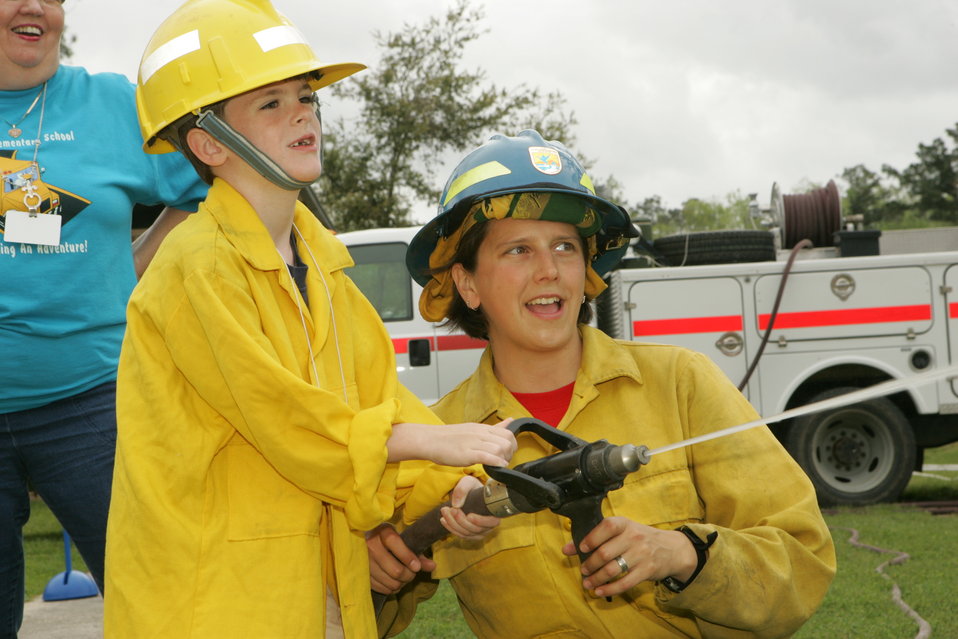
A future fireman.

This boy looks like a firefighter already, as he practices putting out the fire.